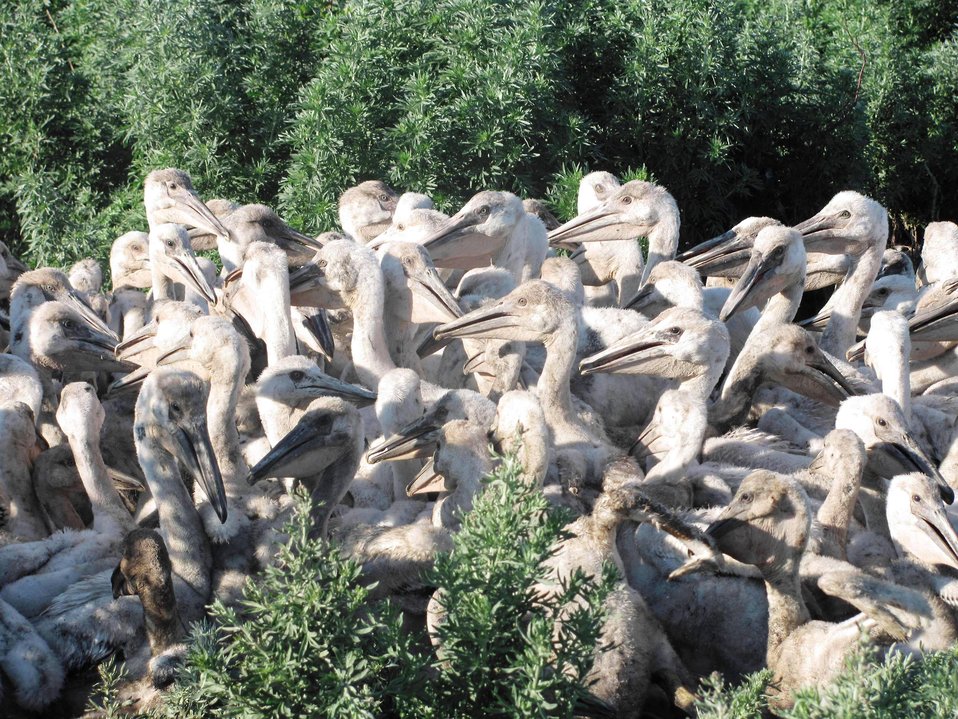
Pelican Creche

These young pelicans formed a creche (group).